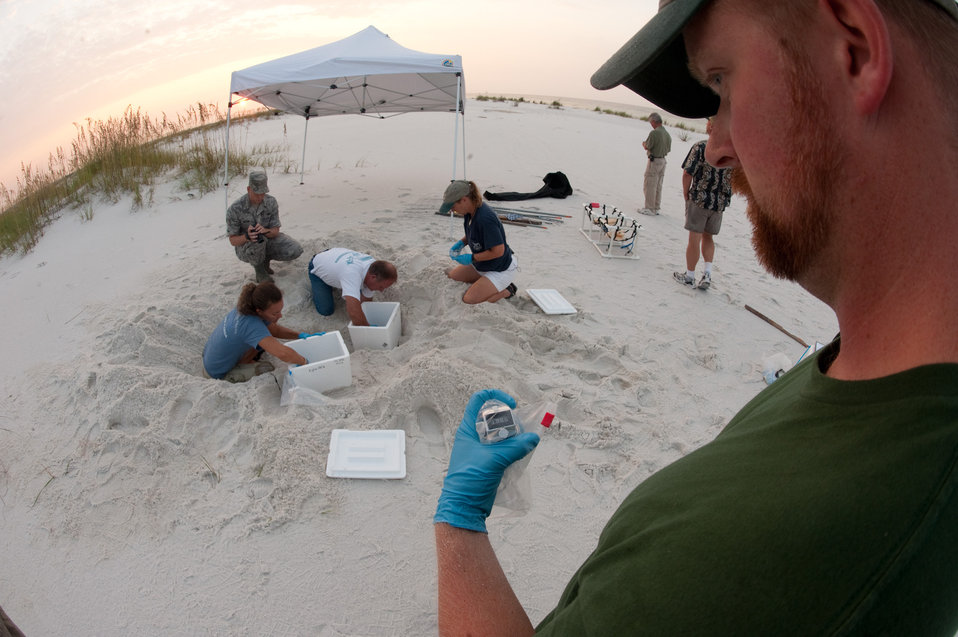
Turtle Eggs avoid Gulf Oil Danger

Dustin Varble uses a counter to help keep track of the number of Loggerhead sea turtle eggs removed from a nest on the beach at Eglin Air Force Base, Fla. More than 300 eggs have been transported to Cape Canaveral, Fla., in hopes of diverting the hatchlings from possible life-threatening exposure to the oil slicks in the Gulf of Mexico. Mr. Varble is a biologist with the 96th Civil Engineer Squadron at Eglin AFB.